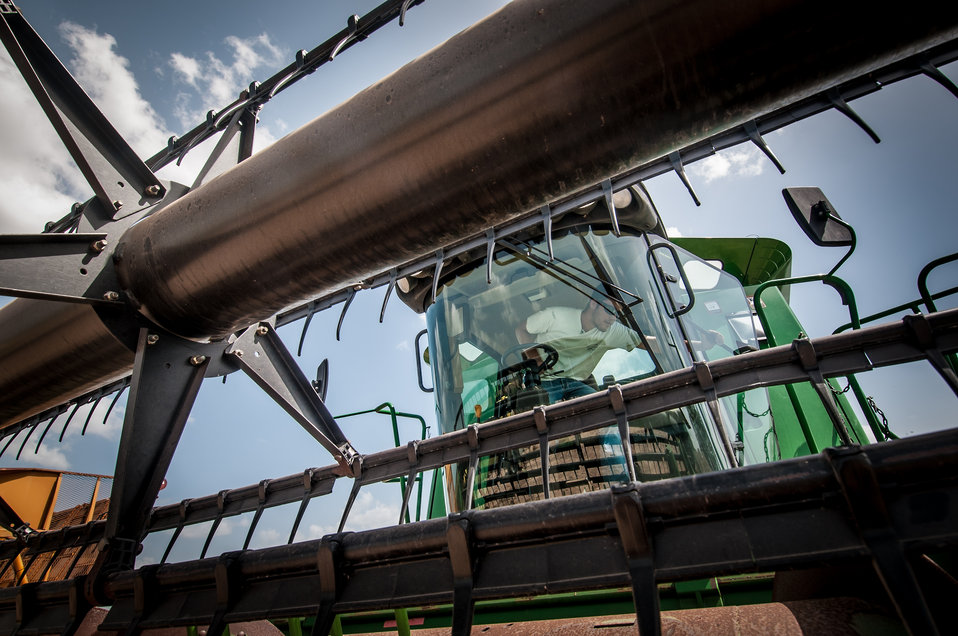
Philip Marek exits one of the family combines at his father's farm (T and S Marek Farms) in Wharton County, TX, on Jun. 20, 2013. Philip Marek has been an independent farm since 2010, starting with 210 acres. Marek and his cousin Josh Marek were able to use a U.S. Department of Agriculture (USDA) Farm Services Agency (FSA) small and new farmer and rancher loan programs provided them the ability to handle initial business start-up and equipment purchase.